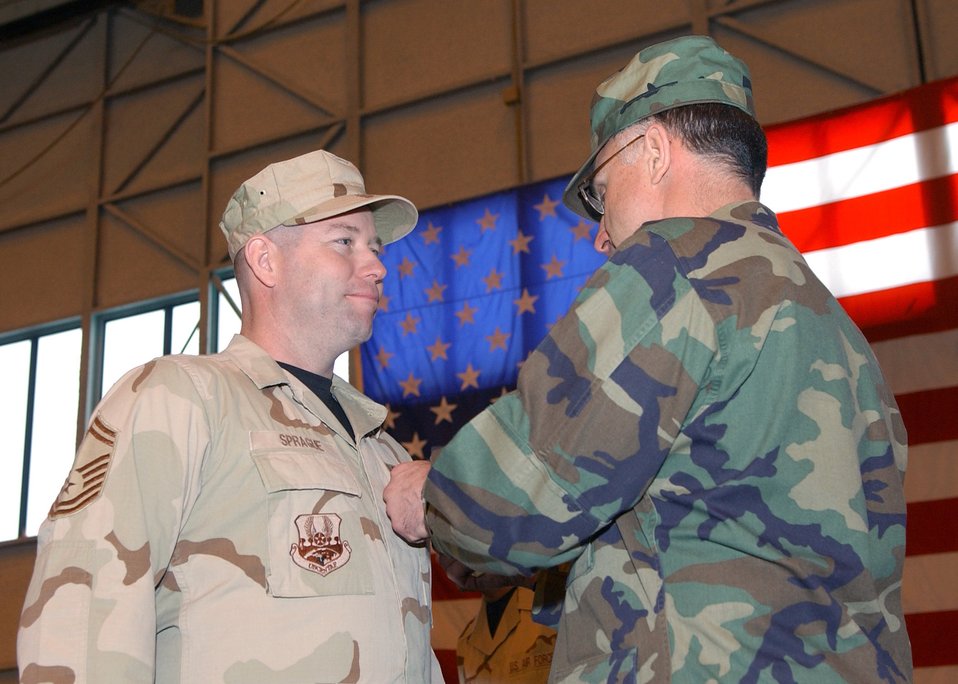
Welcome Home Ceremony

Senior Master Sgt. Dean Sprague, 354th Logistics Readiness Squadron, accepts the Soldier's Medal from 354th Fighter Wing Commander Brig. Gen. Dave Scott during a Welcome Home Ceremony for returning deployed airmen at Eielson Air Force Base, Alaska March 9. Sergeant Sprague's heroic efforts saved the lives of five Afghan civilians during his deployment. .